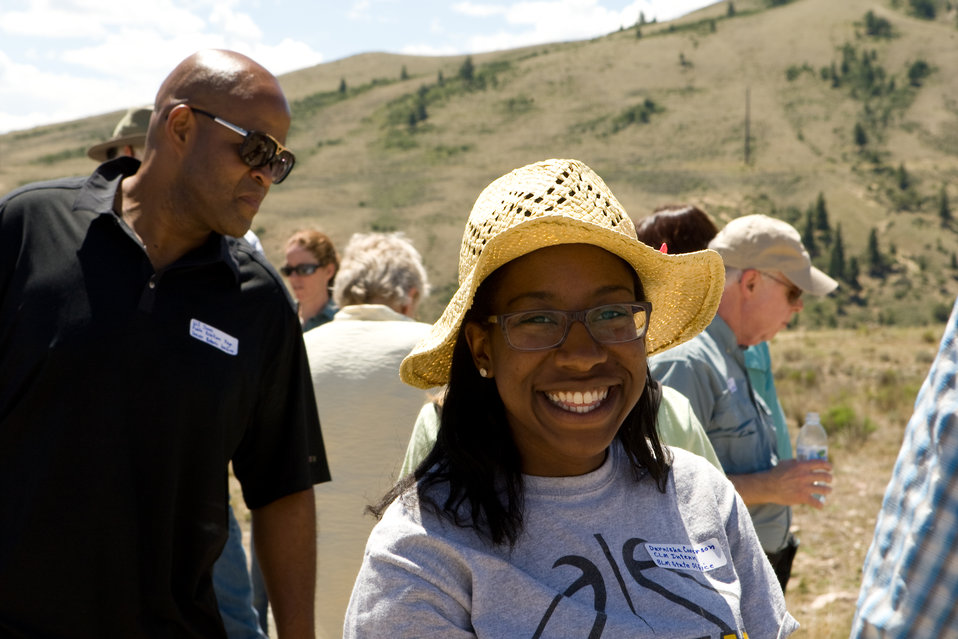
Colorado Rare Plant Conservation Initiative

The Colorado Rare Plant Conservation Initiative (RPCI) is a partnership of 23 statewide and regional agencies, private organizations, and academic institutions working to conserve 121 rare plants in Colorado. As part of these efforts the group developed the Colorado Rare Plant Conservation Strategy, developed Best Management Practices to reduce energy development impacts, addressed climate change, and developed focused strategies for the conservation of individual species at eight priority landscapes. The group has also worked to coordinate volunteer efforts for plant conservation across the state.